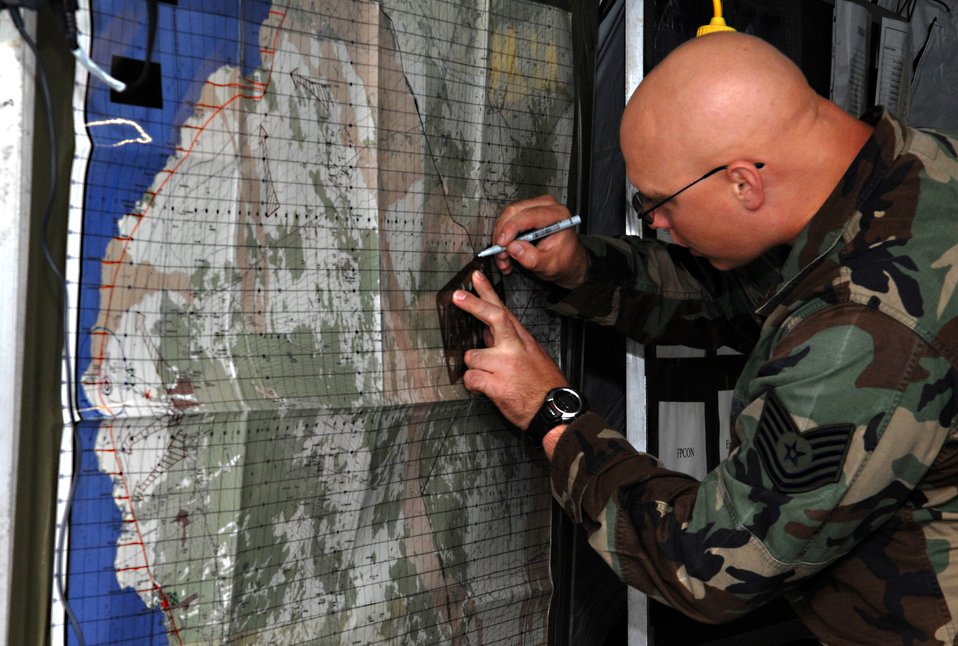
Pacific Lifeline tests humanitarian relief concept

Tech. Sgt. Jeremy Larsen plots grid coordinates of an exercise area during Pacific Lifeline Jan. 29 at the Kona International Airport at Kona, Hawaii. Pacific Lifeline trained participants to deploy in response to a humanitarian assistance or disaster scenario. Sergeant Larsen is a force protection analyst with the 36th Contingency Response Group from Andersen Air Force Base, Guam.